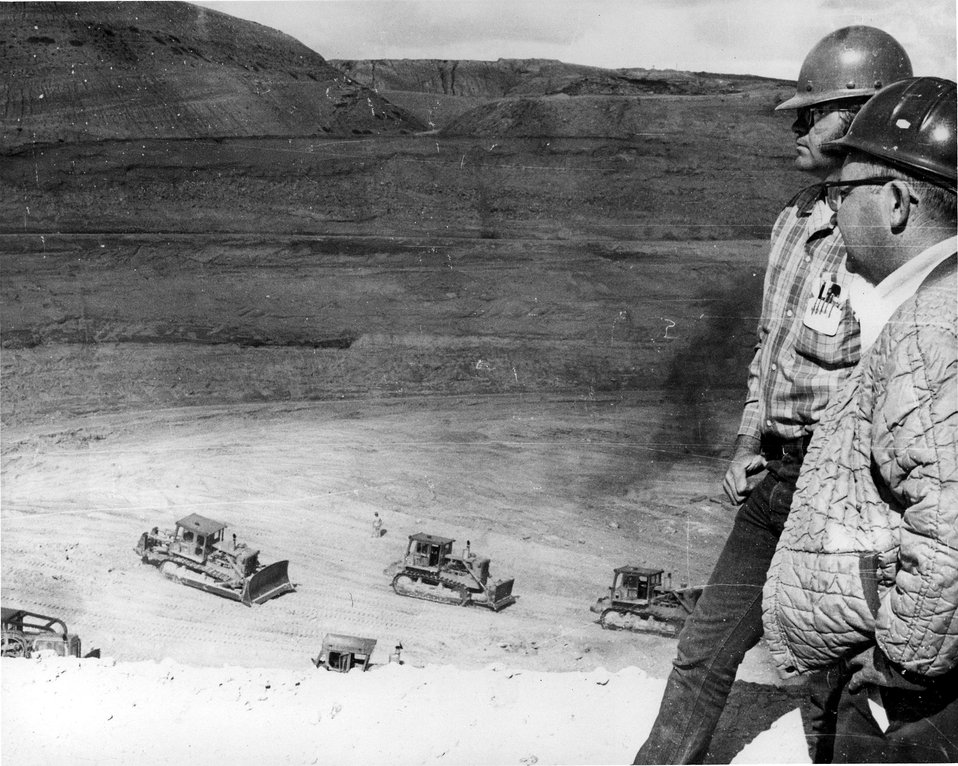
Union Carbide Corporation's mine in West Gas Hills of Wyoming. c. 1976